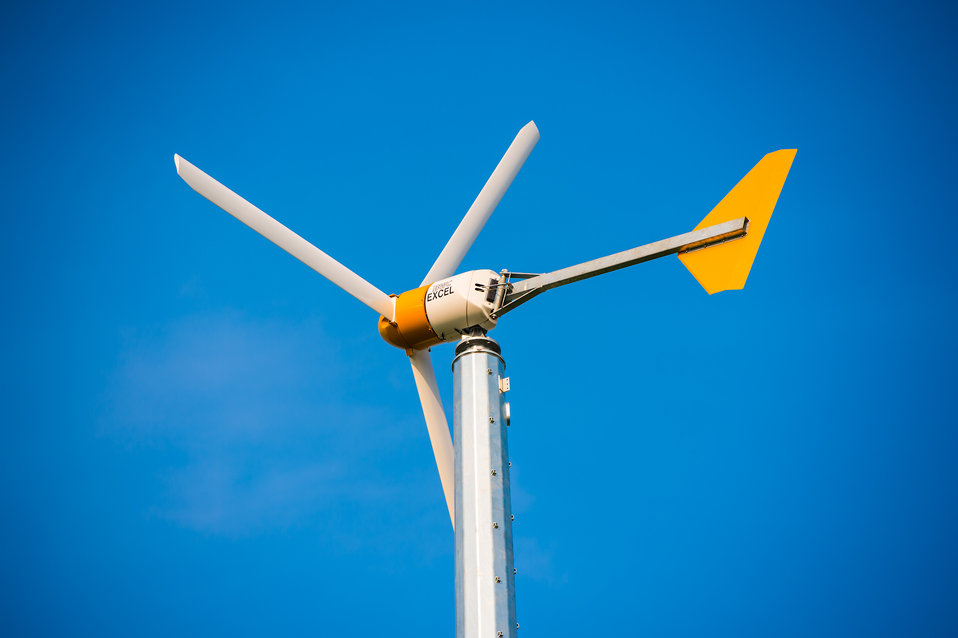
Argonne National Laboratory, the power generated by this 10kw wind turbine helps scientists and engineers study the interaction of wind energy, electric vehicle charging and grid technology.